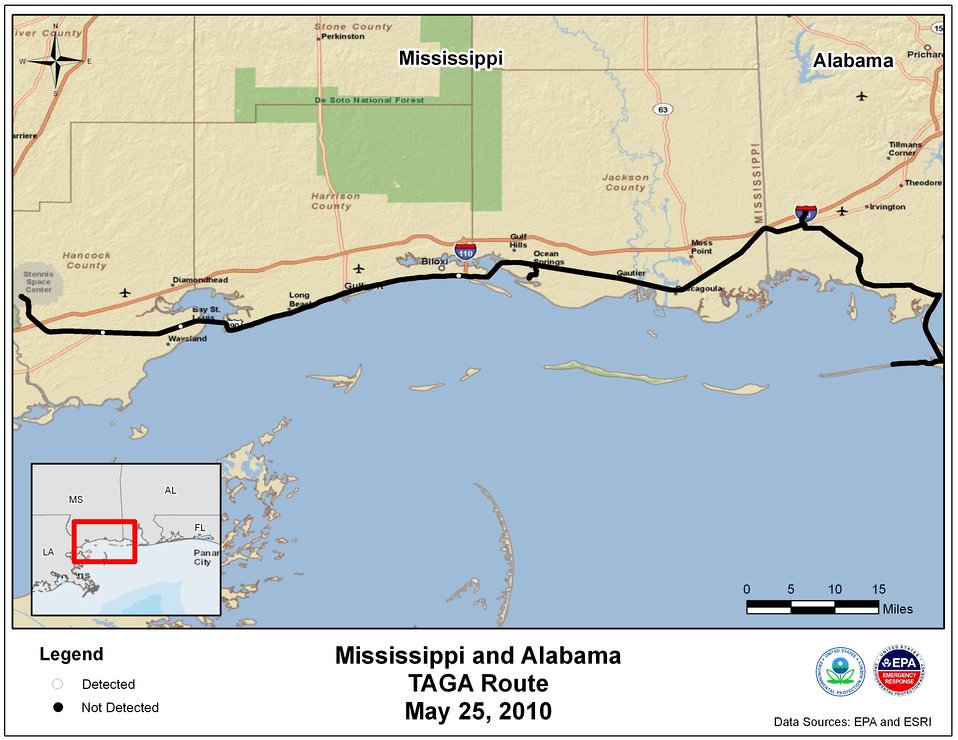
EPA TAGA Air Monitoring Locations May 25, 2010